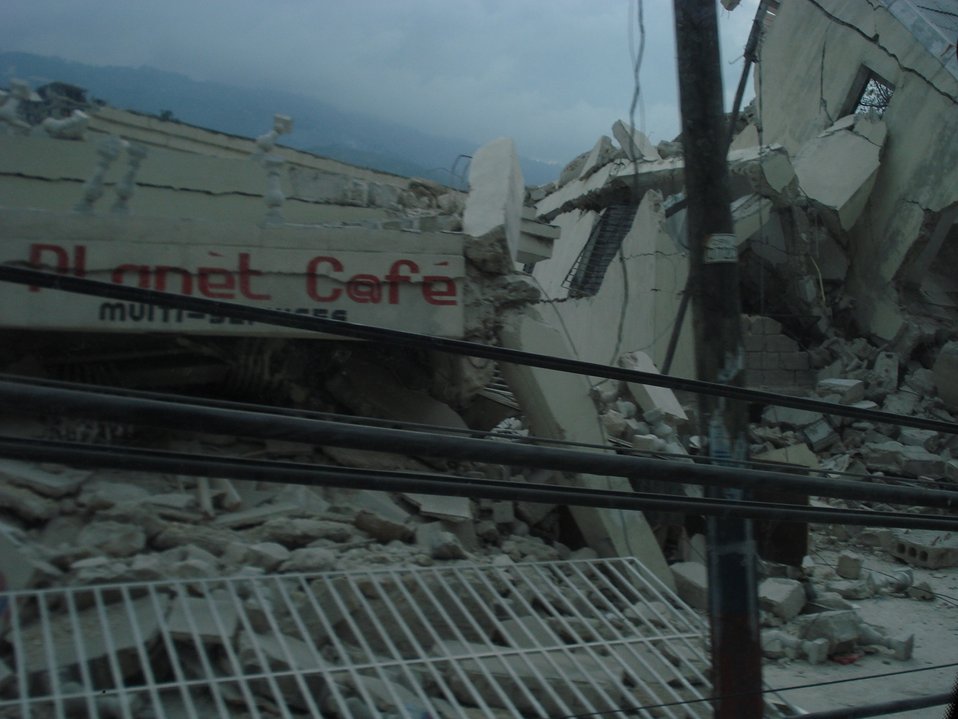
Collapsed 'Planet Cafe' (Haiti Earthquake - 2010)

Photos shot by team sent by the FCC to assist communications recovery in Haiti. Photos shot by team sent by the FCC to assist communications recovery in Haiti.